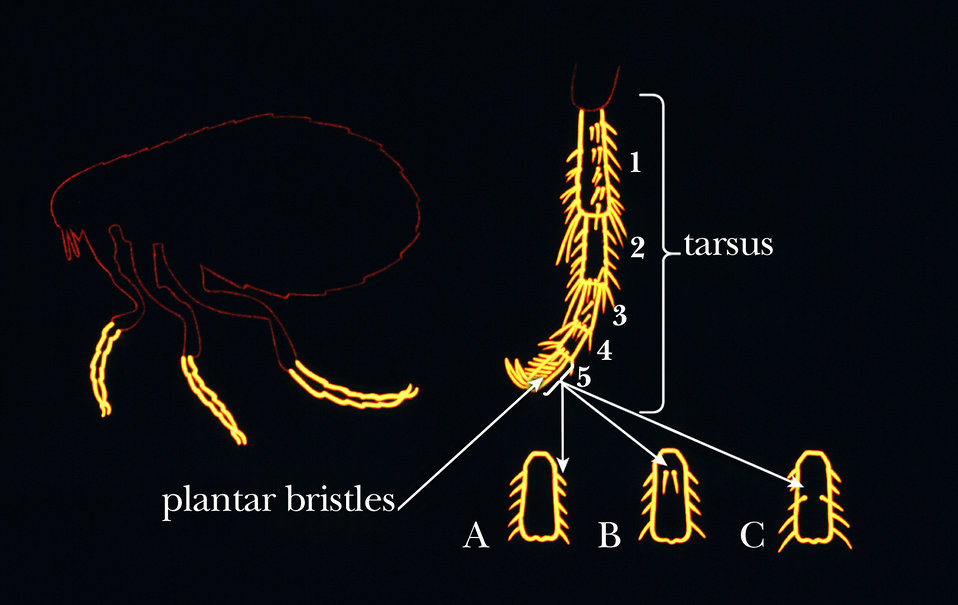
This illustration shows some of the identifying morphologic characteristics of the tarsal region a flea's arthropodal six legs.